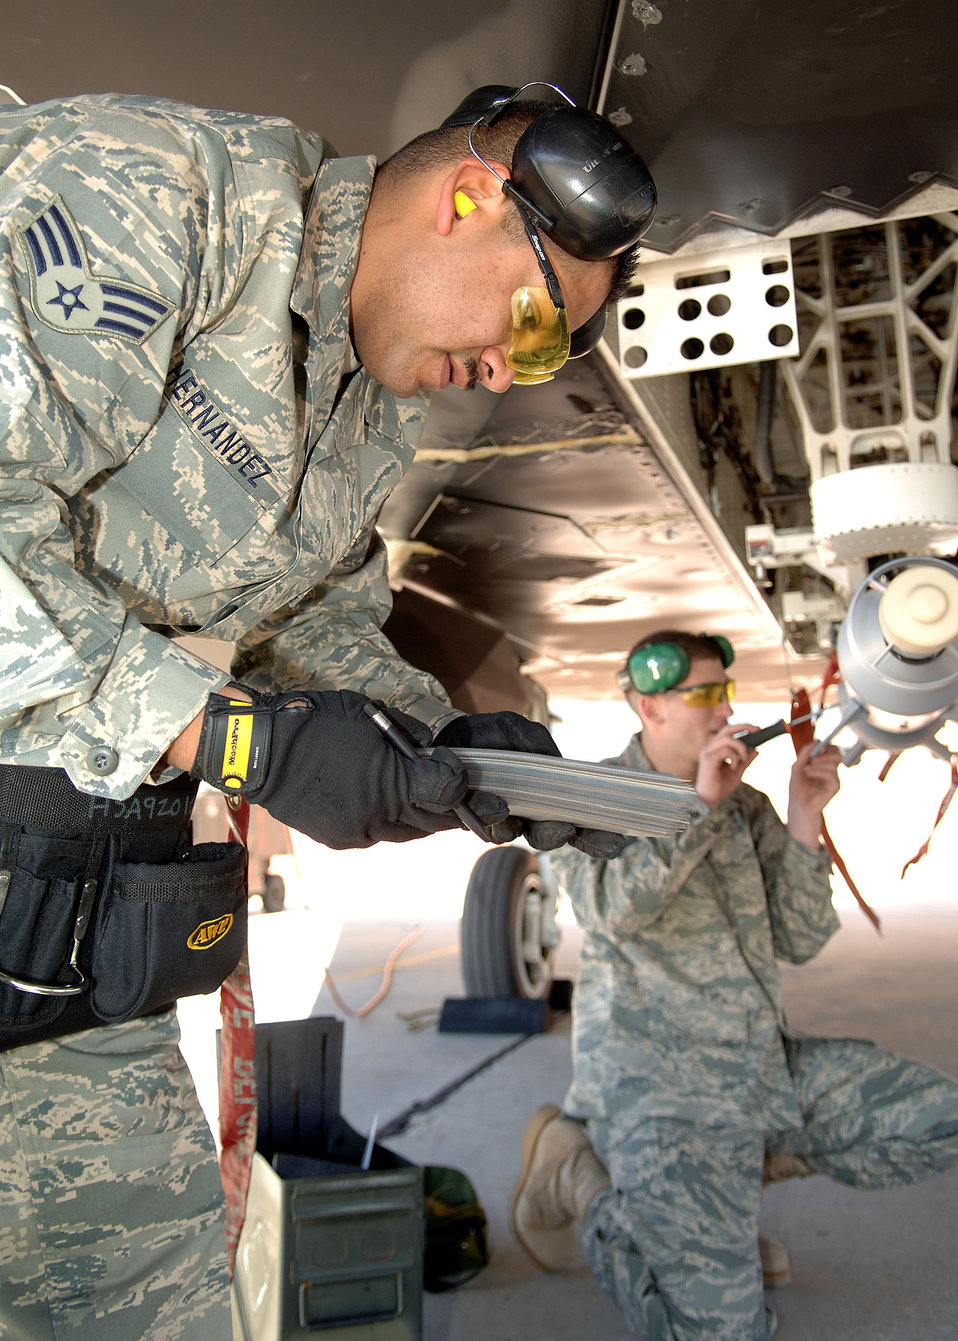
Holloman weapon loaders compete for last time on F-117

Senior Airman Ignacio Hernandez and Airman 1st Class Kyle Davey finish their final check on a guided bomb unit-12 during the F-117 Nighthawk Weapons Load Crew of the Year Competition Jan. 18 at Holloman Air Force Base, N.M. The competition is the last of its kind for the F-117. Airmen Hernandez and Davey are assigned to the 49th Aircraft Maintenance Squadron.